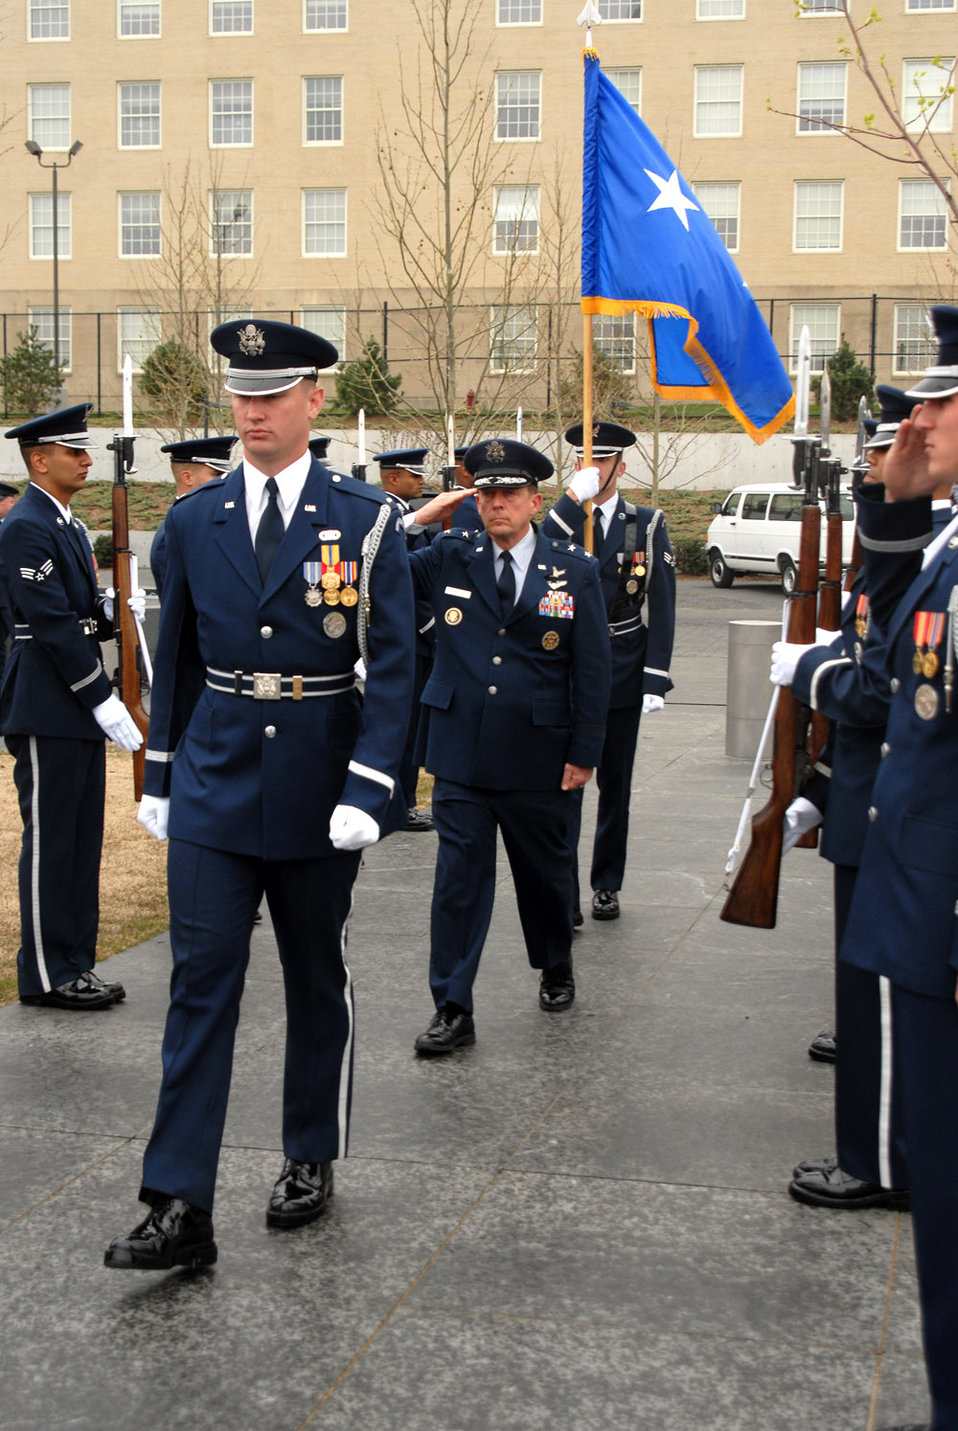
Air Force Review held at memorial

First Lt. Brent Mundie leads Maj. Gen. Robert L. Smolen through the arrival cordon before beginning the Air Force Review ceremony held April 14 at the Air Force Memorial in Arlington, Va. General Smolen is the Air Force District of Washington commander, and Lieutenant Mundie is an Air Force Honor Guard ceremonial guardsman.